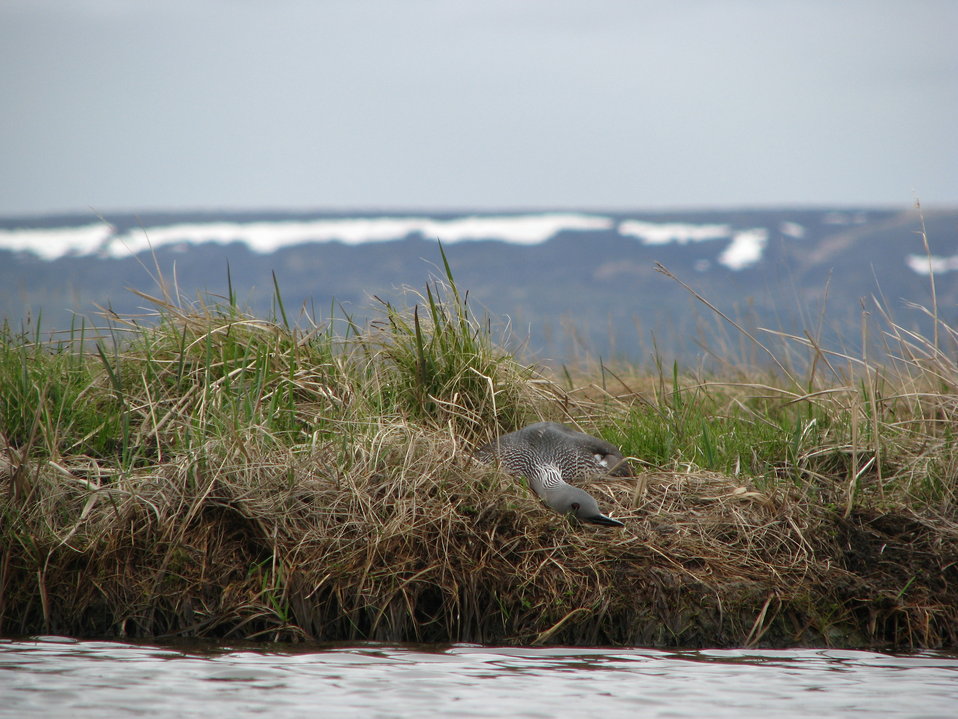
Red throated loon on nest

USFWS Yukon Delta NWR